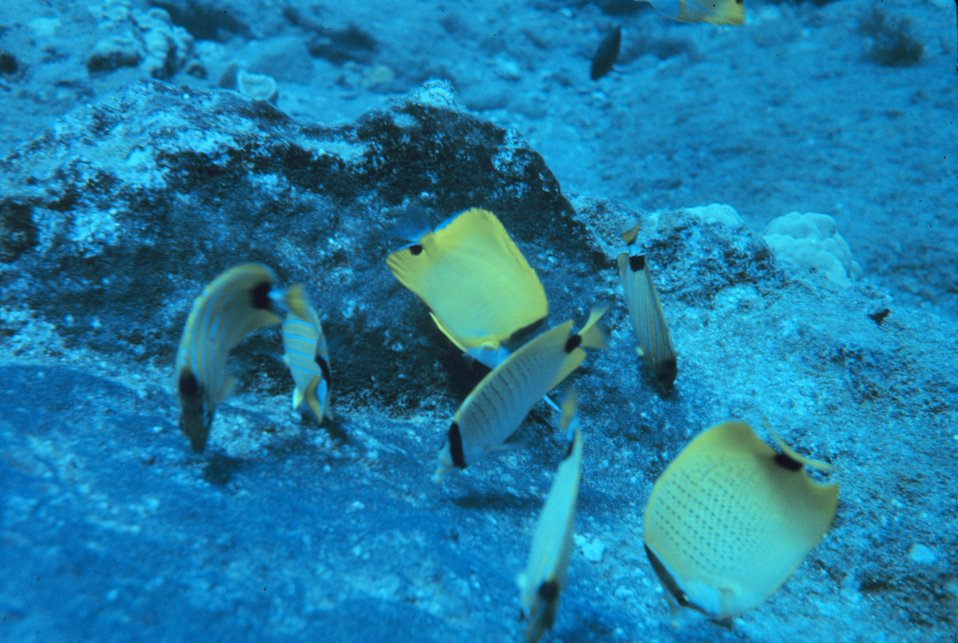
Species of butterflyfi feeding on damselfish eggs attached to substrate. Chaetodon miliaris are three yellow fish on bottom right. Blue striped fish are Chaetodon sp. Forcipiger longirostris is bright yellow fish in background.